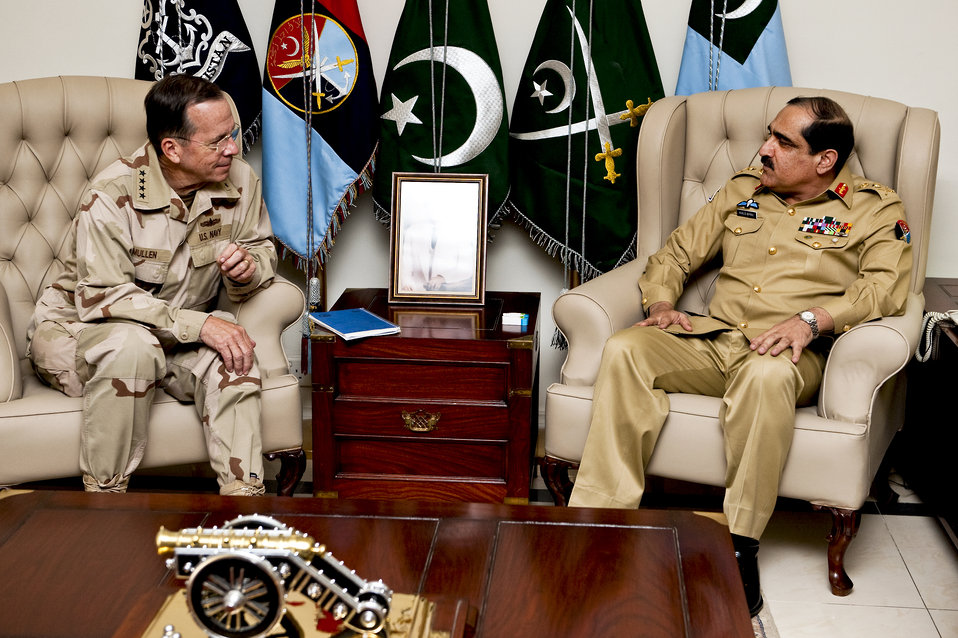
CJCS visits Pakistan

Navy Adm. Mike Mullen, chairman of the Joint Chiefs of Staff, meets with Pakistani Gen. Khalid Shameem Wynne, chairman of the Joint Chiefs of Staff Committee in Rawalpindi, Pakistan on April 20, 2011. Admiral Mullen is visiting the Central Command area of operation and counterparts and service members stationed in the area.